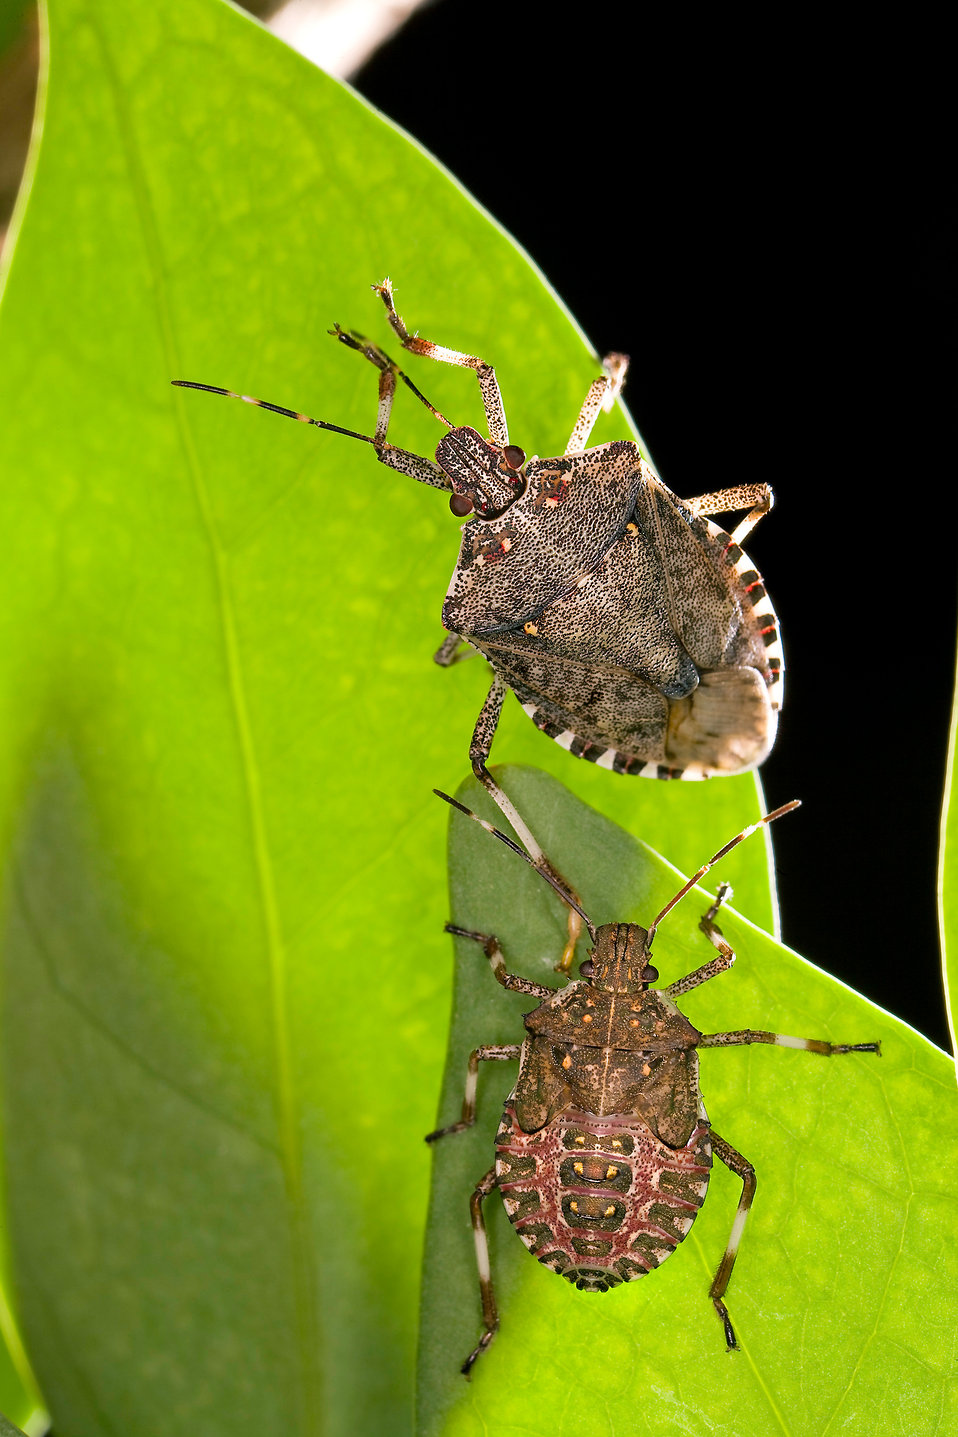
arstinkbugs

The brown marmorated stink bug, a winged pest from Asia that is eating crops and infesting U.S. homes. The U.S. Department of Agriculture's (USDA) Agricultural Research Service (ARS) scientists are launching a campaign to ask volunteers to count the number of stink bugs in their homes.